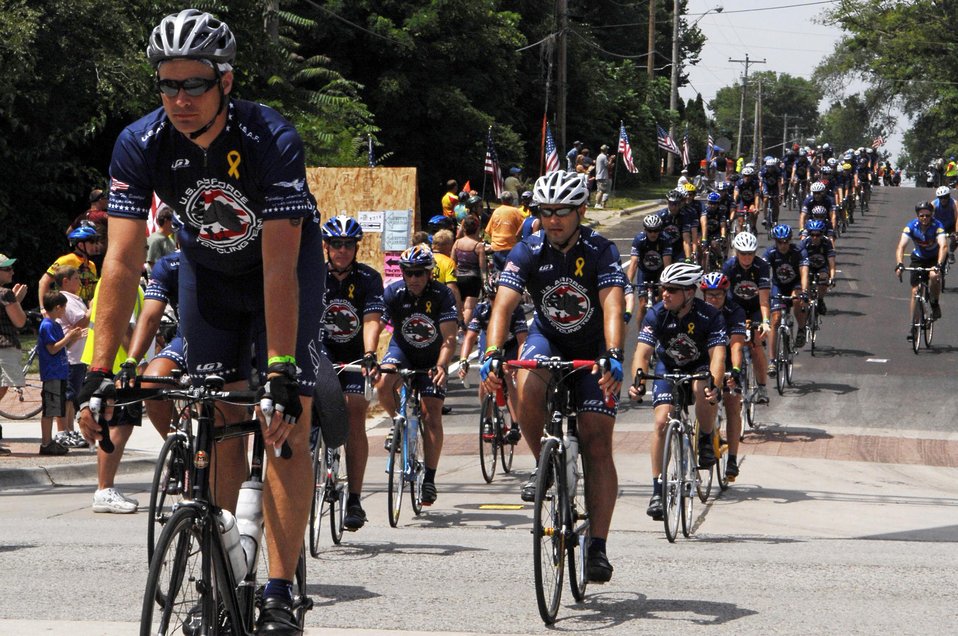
Rolling, rolling, rolling

Members of the Air Force Cycling Team ride through cheering crowds July 26 at the completion of the Registers Annual Great Bike Ride Across Iowa in Le Claire, Iowa. The team has been participating in the RAGBRAI for the past 14 years.